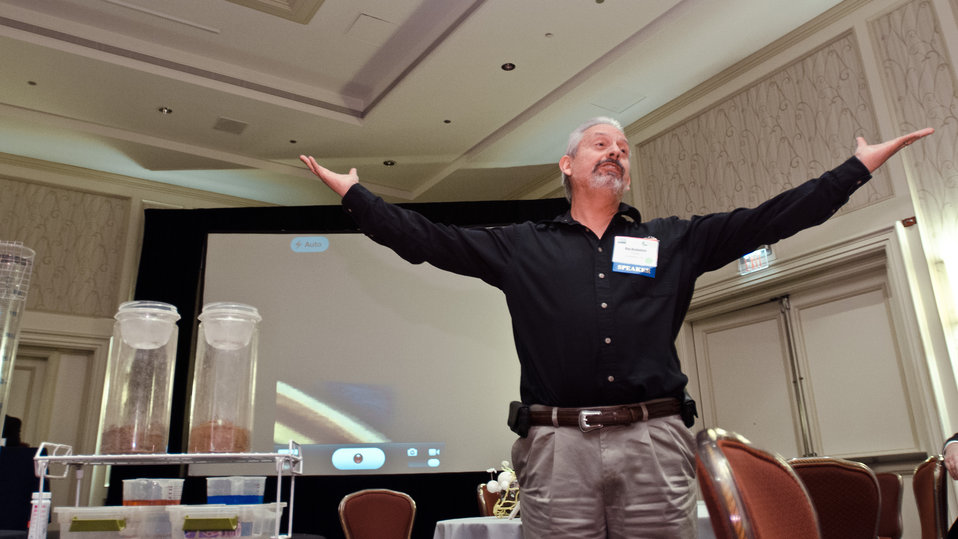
The U.S. Department of Agriculture (USDA) Natural Resources Conservation Service National Soil Health and Sustainability Team Agronomist Ray Archuleta demonstrate the usually unseen and misunderstood differences between healthy soil and how soils can become unhealthy, during the
2013 Agricultural Outlook Forum held at the Crystal Gateway Marriott Hotel in Arlington, VA on Friday, Feb. 22, 2013. Mr Archuleta is a champion for understanding soil health as the foundation for farming sustainably in the 21st century: reducing chemical inputs; creating sustainable farming; improving water holding capacity; improving the farmer’s bottom line; and feeding an increasing global population. The breakout session on Reducing Risks by Improving Soil Health examined the indicators of soil health, to reduce chemical inputs and apply the right techniques for sustainable production and other benefits. Soil health is defined as the capacity of the soil to function as a living ecosystem that sustains plant, animal, and human health with limited human intervention.